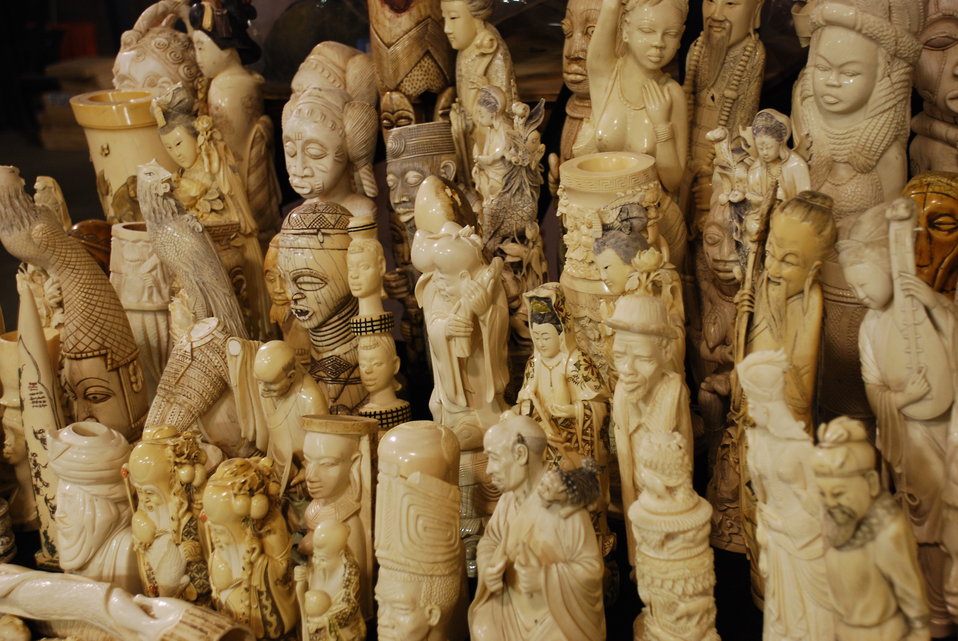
Ivory Crush 2013